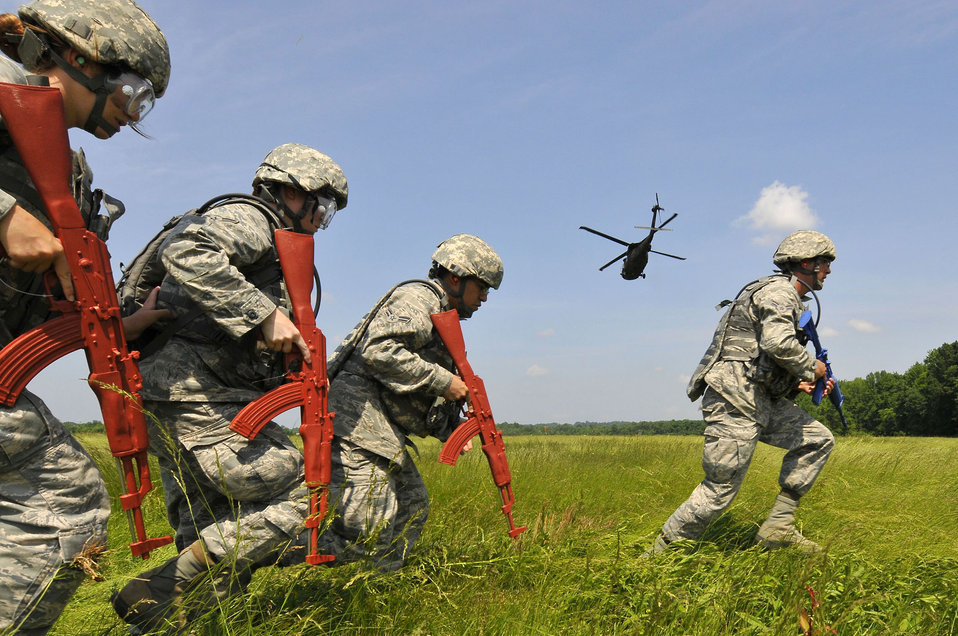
Walk this way

Airmen move out May 25, 2011, during helicopter deployment readiness training at Ft. Belvoir, Va.